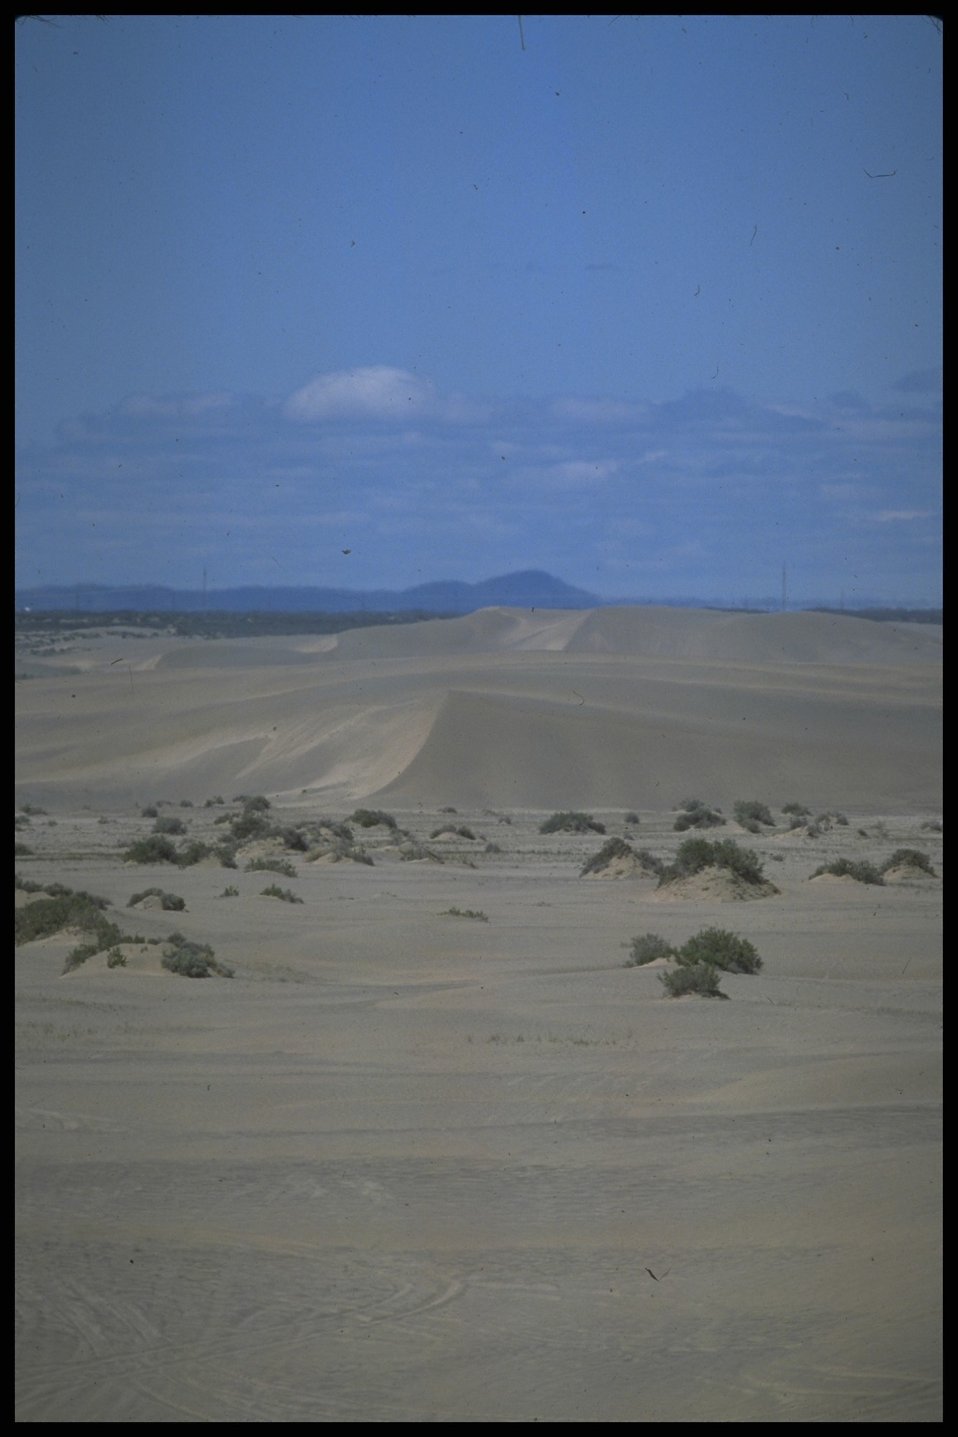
Scenic view of Sand Dunes in Christmas Valley, Lakeview District.